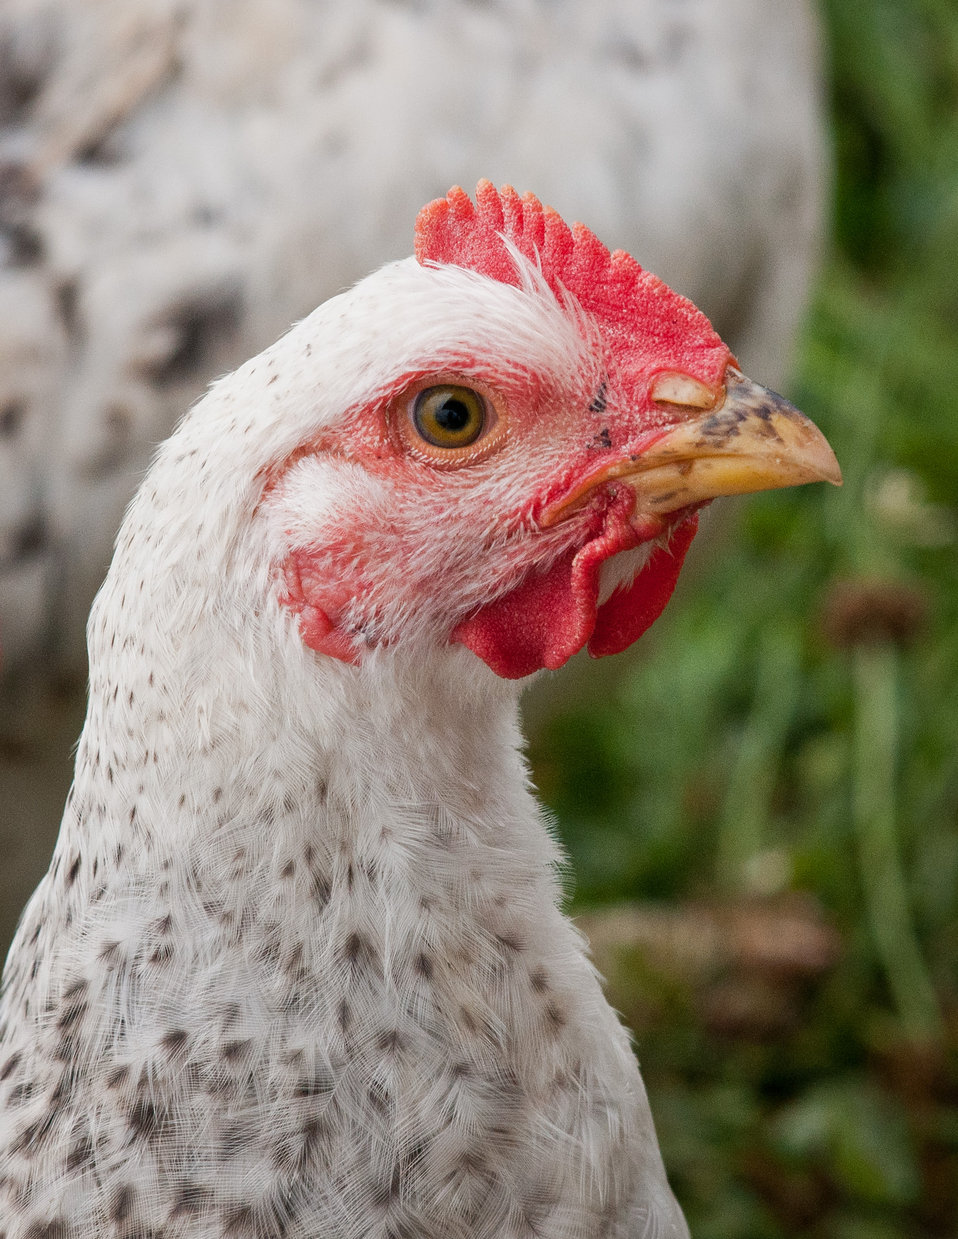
Broiler chickens graze on organic pastures and live in pens that protect them from predators, direct sun light, and wind at Nick’s Organic Farm, owned by Nick Maravell in Adamstown, MD on Friday, July 12, 2013. The enclosures are light enough to be moved by hand, each day, one consecutive section at a time. This allows the pasture to easily recover from the grazing. The farm produces Black Angus beef, chicken, turkey, eggs, hay, soybeans, corn, alfalfa, orchard grass, rye; and other crops. The cattle are100% grass-fed receiving certified organic pasture, certified organic hay (in winter), water and mineral salts mixed with sea kelp. The cattle are not fed hormones, antibiotics or animal products. Poultry feed from grain is ground from organic grain. The poultry also graze on organic pastures. The farm has conducted on-farm research with federal, state and non-profit agencies to refine organic practices. An organization such as the U.S. Department of Agriculture (USDA) Agricultural Research Service (ARS) center in Beltsville has been able to conduct research to improve organic crops and to breed and manage the cattle so that they have.